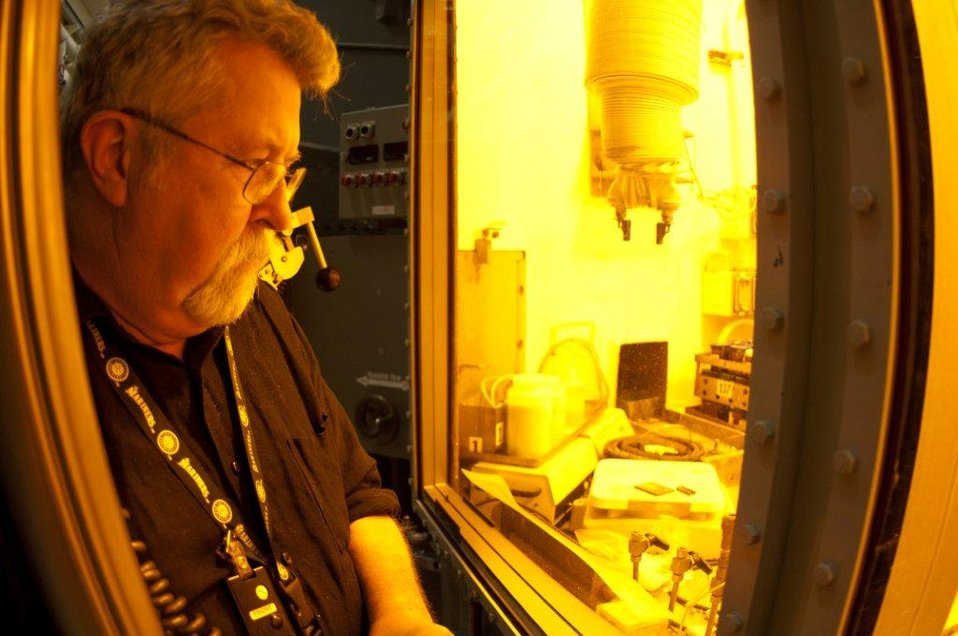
Recovery Act work at Hanford